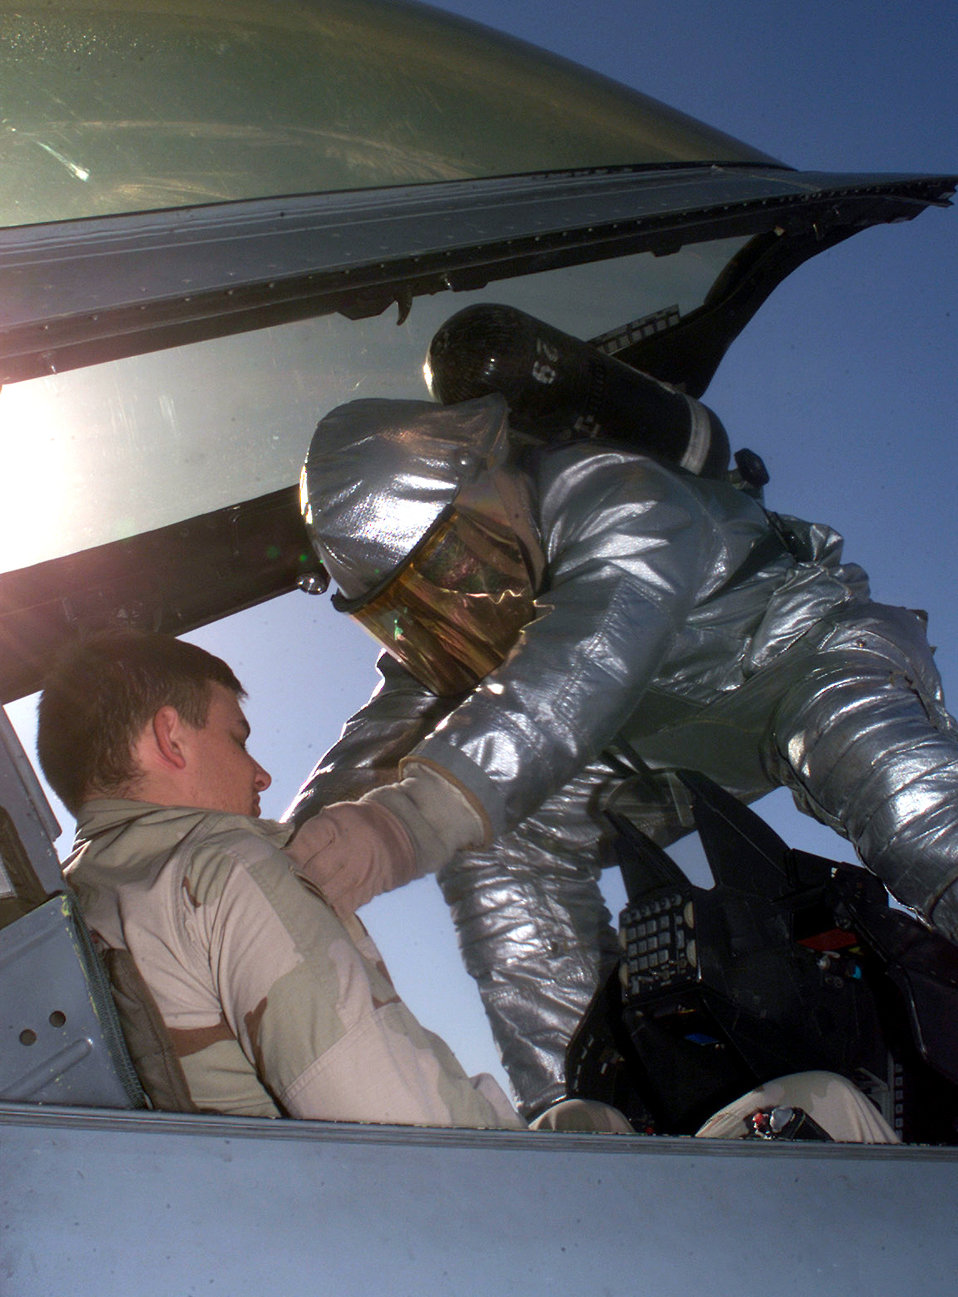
Pilot rescue

OPERATION ENDURING FREEDOM -- Staff Sgt. Christopher Winters extracts Airman 1st Class Jeffery Kinkade from an aircraft during a training exercise. Both airmen are currently deployed to the 379th Expeditionary Civil Engineer Squadron at Al Udeid Air Base, Qatar.